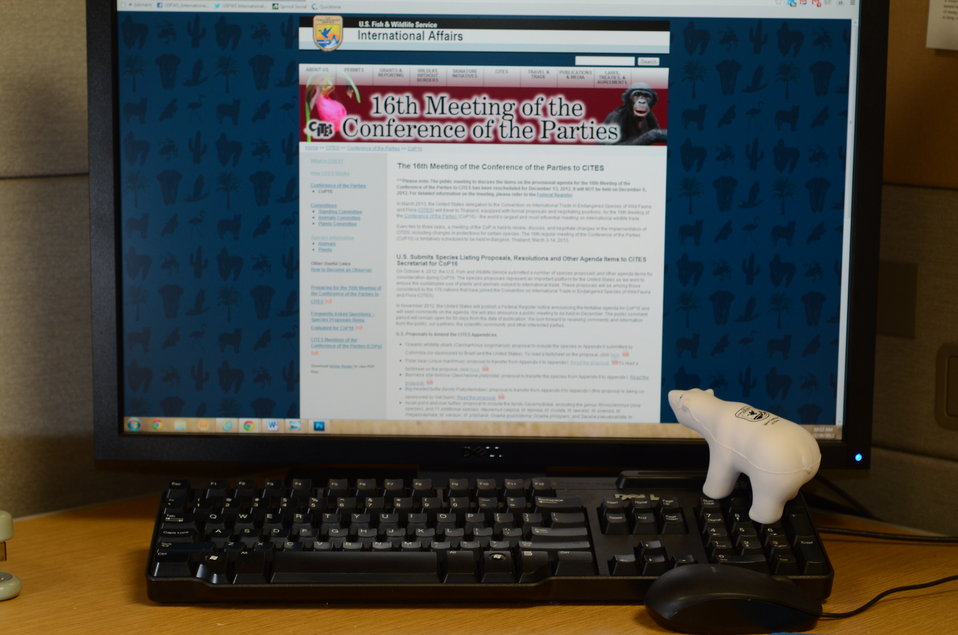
At the Office

Just another day in the office. But next week our polar bear is travelling to Europe with USFWS Director, Dan Ashe, to talk with leaders about polar bear conservation. Follow our polar bear’s journey across Europe next week and guess where he is!

Photo taken by Frank Kohn/USFWS, Arlington, Virginia, 2012.